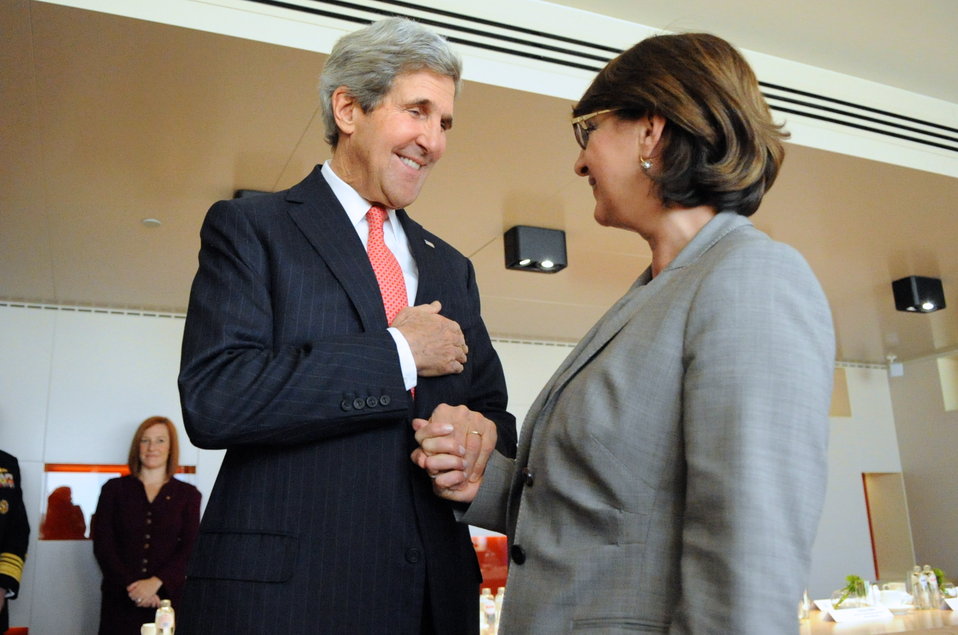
Secretary Kerry Meets With Georgian Foreign Minister Panjikidze

U.S. Secretary of State John Kerry meets with Georgian Foreign Minister Maia Panjikidze before they attend NATO Ministerial meetings in Brussels, Belgium, on December 3, 2013.